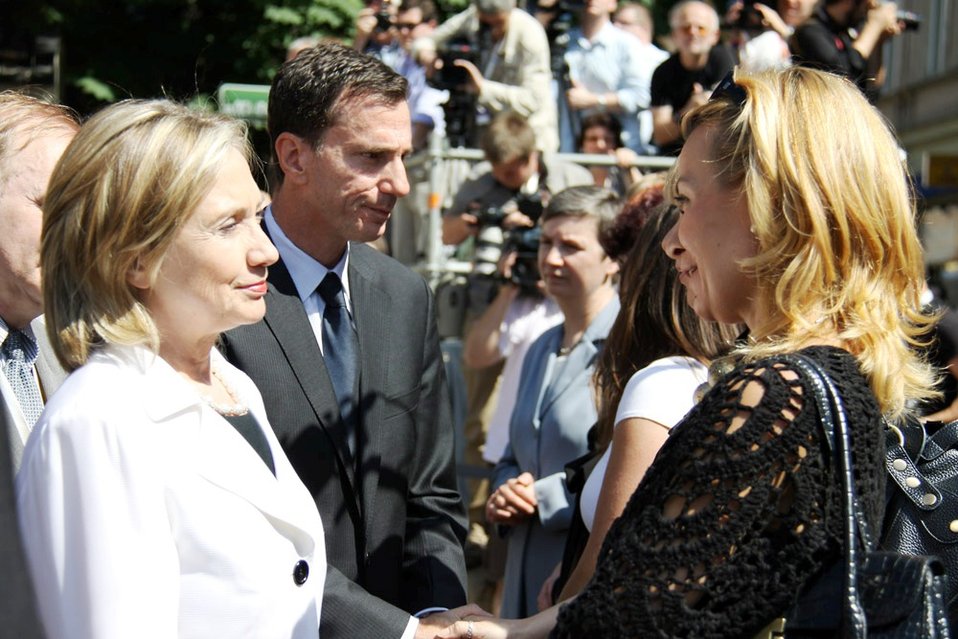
Secretary Clinton and Ambassador Feinstein Speak With Surviving Family Members of Those Who Were Killed in April 10, 2010, Plane Crash

U.S. Secretary of State Hillary Rodham Clinton and U.S. Ambassador to Poland Feinstein speak with the surviving family members of those who were killed in the plane crash of April 10, 2010, in Krakow, Poland, on July 3, 2010.